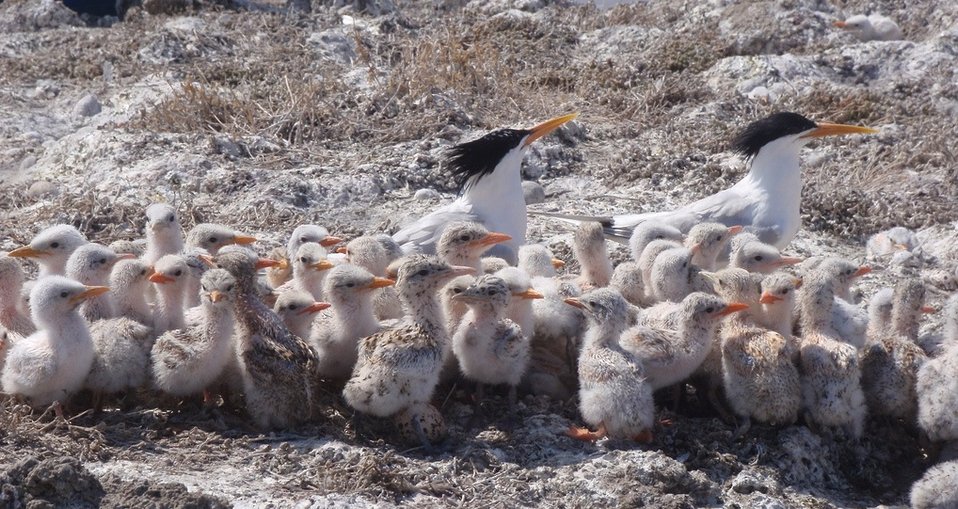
elegant tern chicks and parents

San Diego Bay National Wildlife Refuge, CA